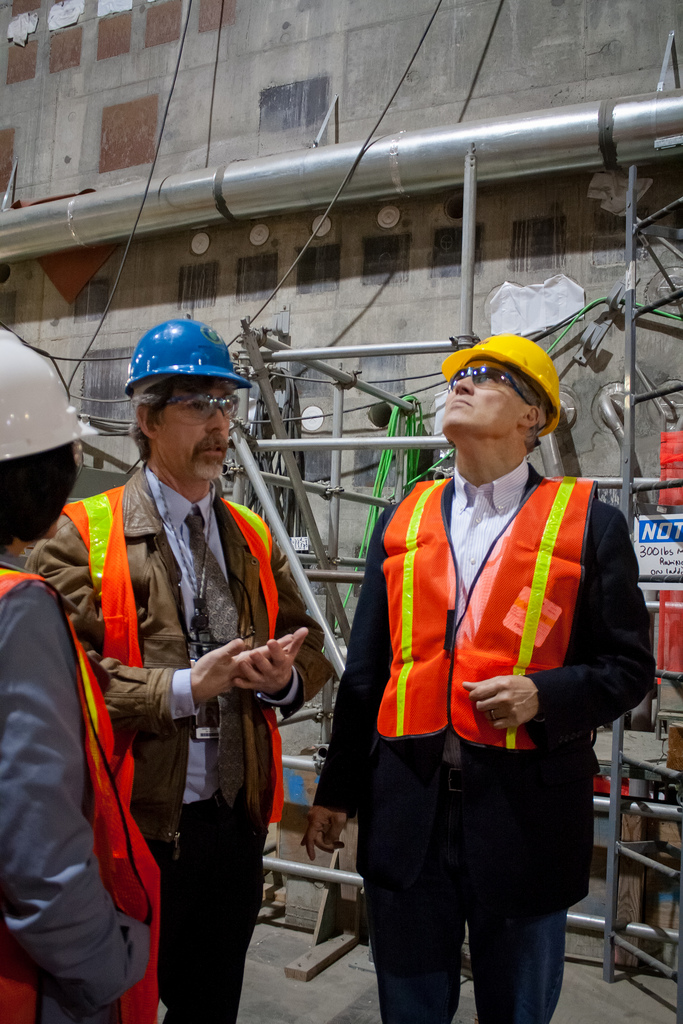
Inslee Visit at Hanford

Washington State Governor Jay Inslee, accompanied by Senior Advisor for Environmental Management Dave Huizenga, visits Hanford Tank Farms and Waste Treatment Plant